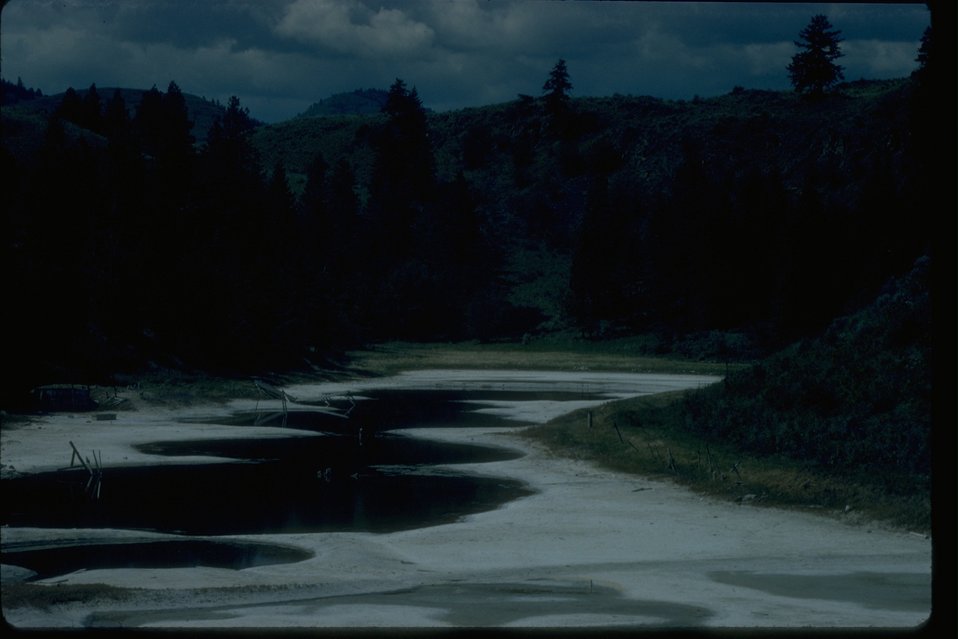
A unique saltwater lake in the Hot Lakes Research Natural Area in Okanogan County, Washington.